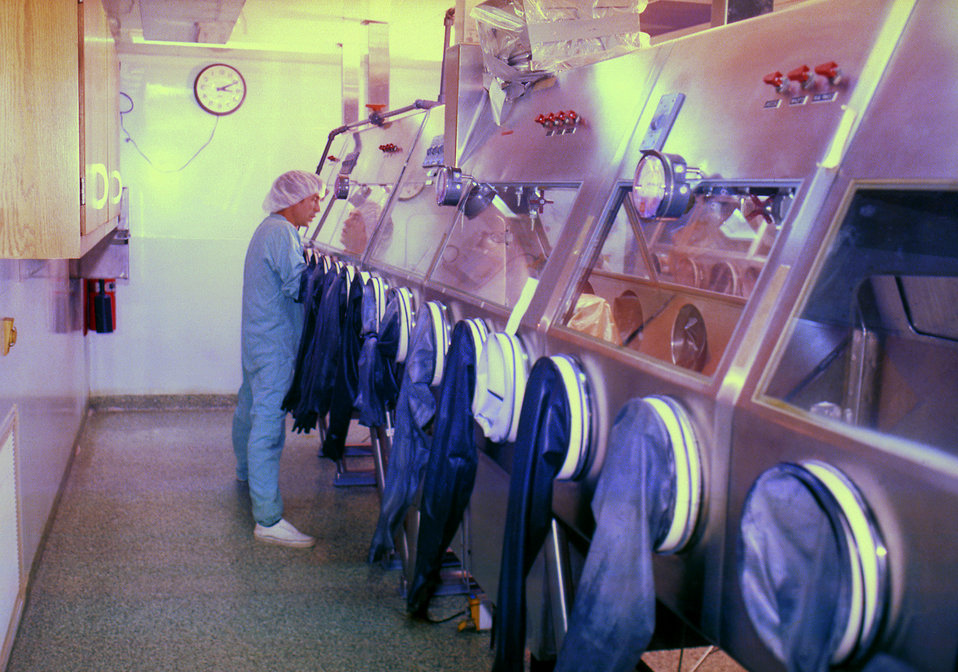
The former BSL-3 containment cabinets in a maximum containment laboratory, prior to the construction of the modern BSL-4 Labs.